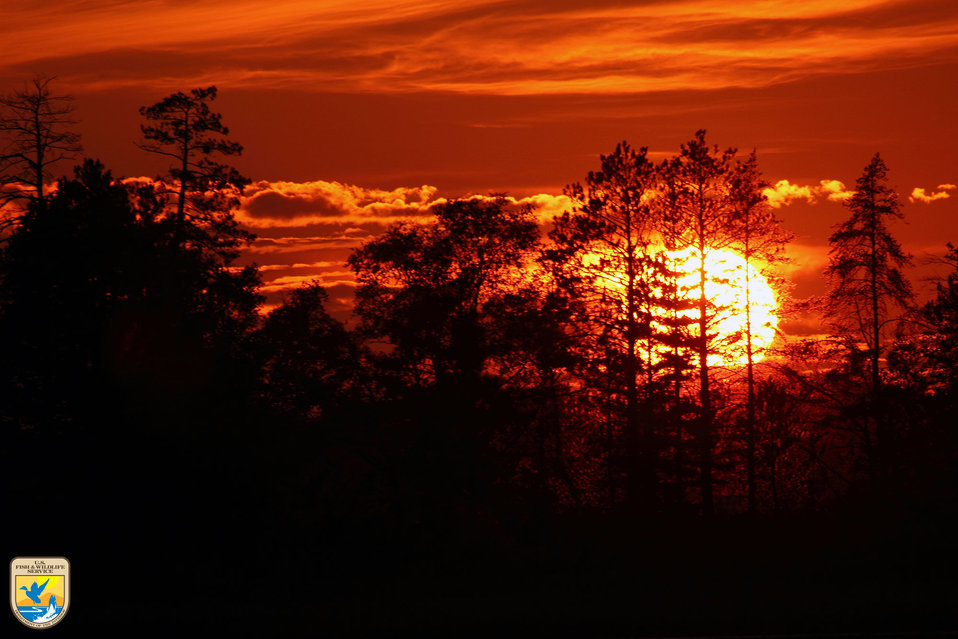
Sunset - Region 3

Sunset through the trees at Seney National Wildlife Refuge in Michigan